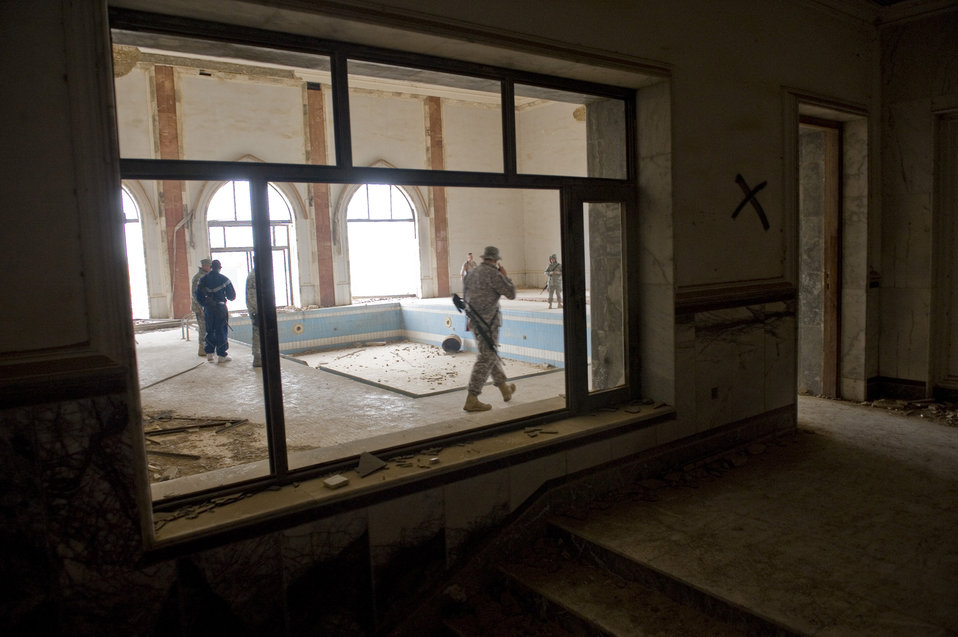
Chapel staff bolsters morale, mission focus from a unique perspective

Service members stationed in Baghdad explore the Baath Party House during a tour of historic buildings at Baghdad, Jan. 29. The pool in the house was never filled with water; instead Baath party members used the pool as a make-shift torture chamber.